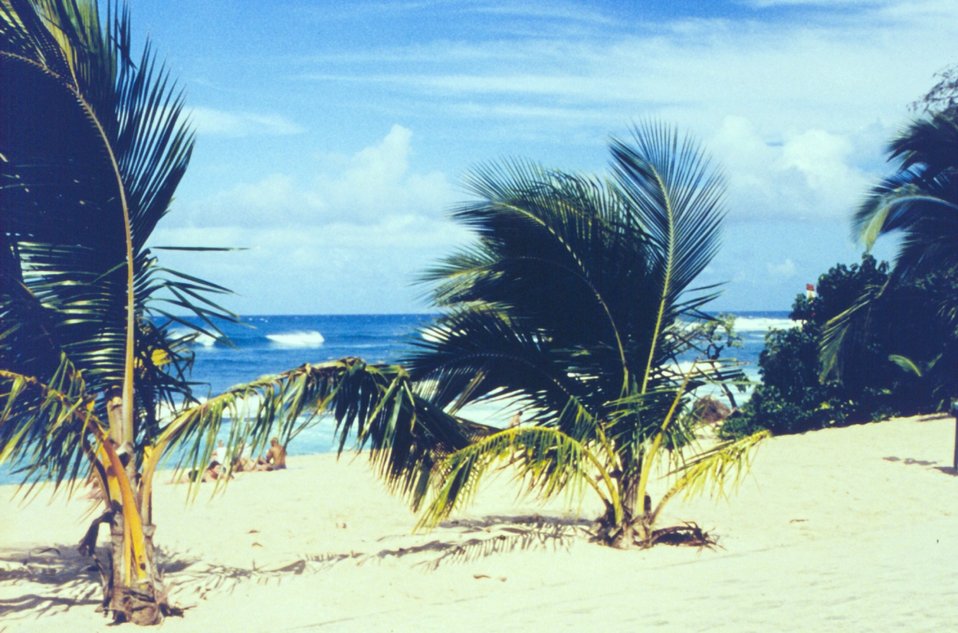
Sunset Beach on the North Shore.